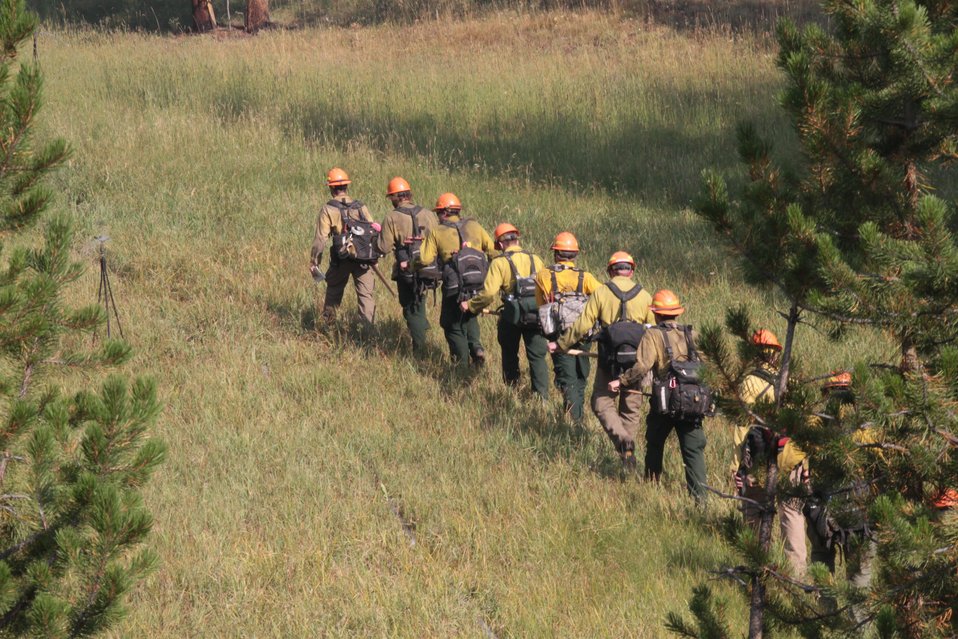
Fire crews hike through the park to fight the Druid Complex Fire. The Druid Complex Fire in Yellowstone National Park in Wyoming began on Aug. 13, 2013 by lighting has consumed approximately 11,658 acres.